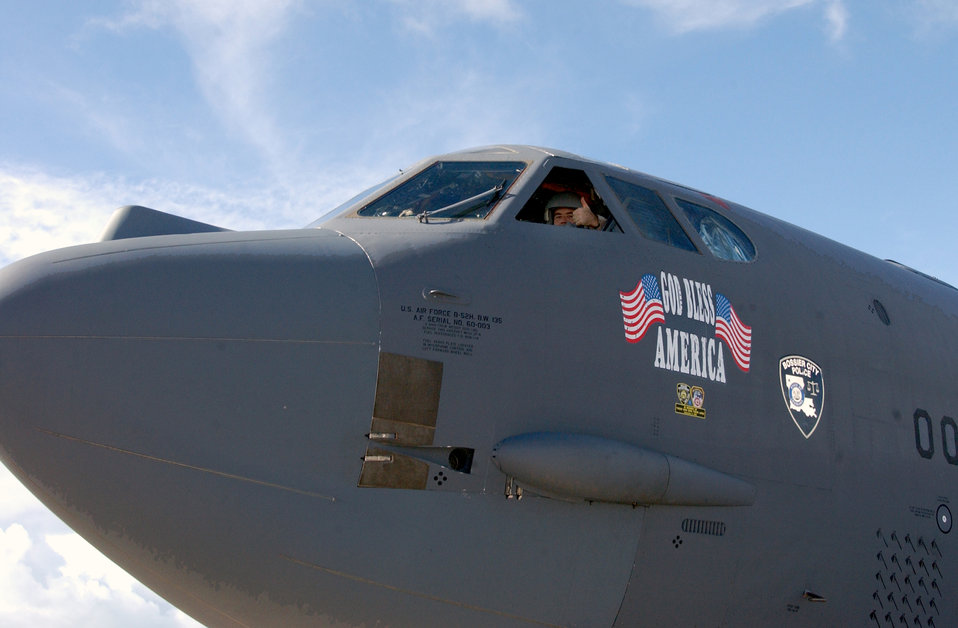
Thumbs up

OPERATION IRAQI FREEDOM -- A 40th Expeditionary Bomb Squadron pilot signals ready with a